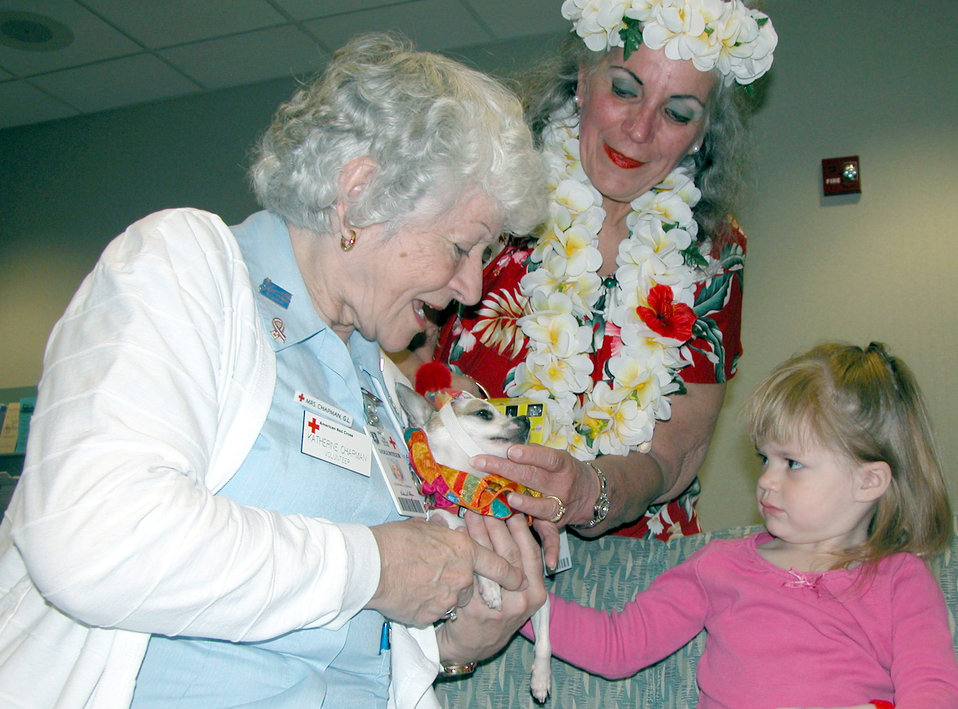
Pet therapy

EGLIN AIR FORCE BASE, Fla. -- Katherine Chapman (left) and Renee Gault and her 4-year-old Chihuahua, Pancho, try to comfort a timid Grace Voce during a visit to the pediatric clinic here. Mrs. Gault and Poncho are part of Eglin Hospital's pet therapy program.